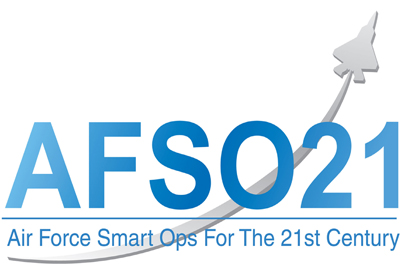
AFSO21